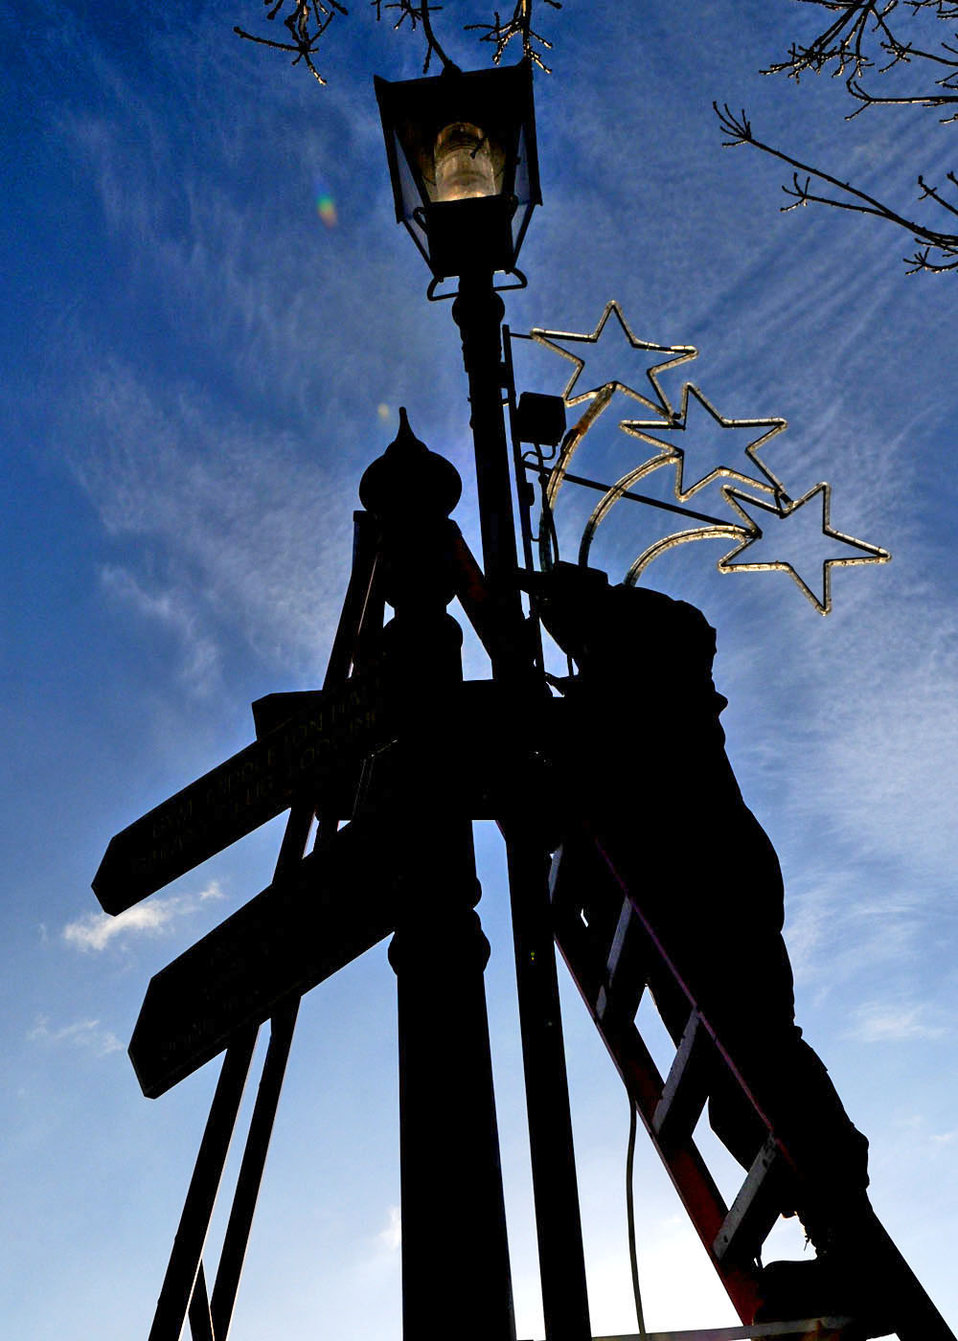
Holiday stars light the path

Staff Sgt. Rafeeq Jordan hangs up holiday star lighting Nov. 18 at Royal Air Force Mildenhall, England, to prepare for the holiday season. He is an electrical systems craftsman from the 100th Civil Engineering Squadron.